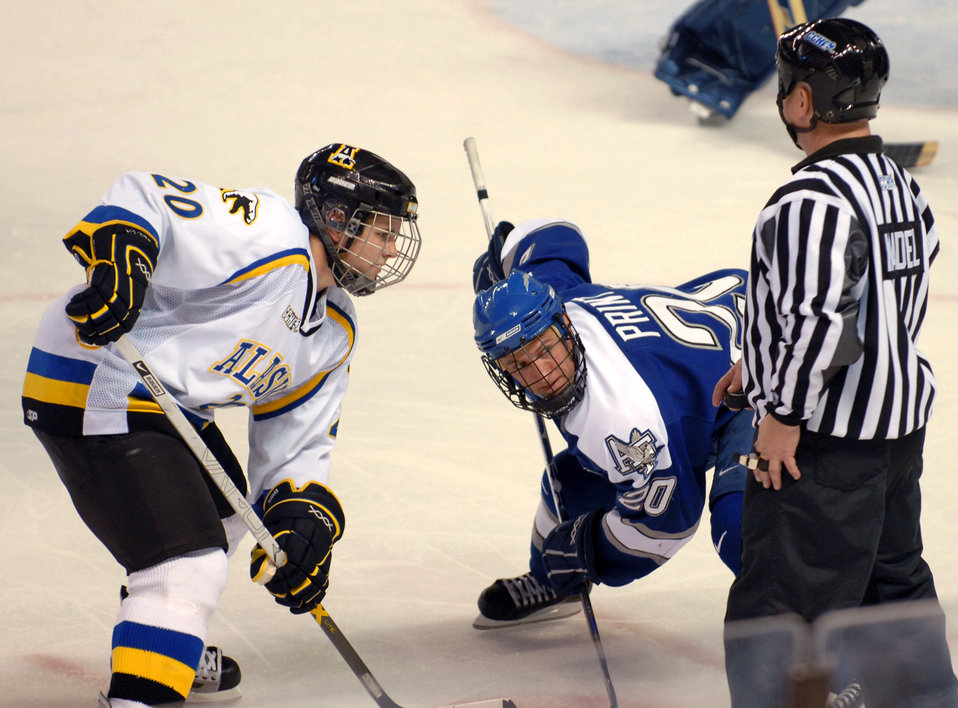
Falcons face tough ice foe

Dion Knelsen of the University of Alaska-Fairbanks Nanooks faces off against Cadet 2nd Class Josh Print of the U.S. Air Force Academy Falcons at the Carlson Center in downtown Fairbanks on Oct. 14. The Nanooks went on to win the game 8 to 4. The Falcons fell to 1-3 for the season.